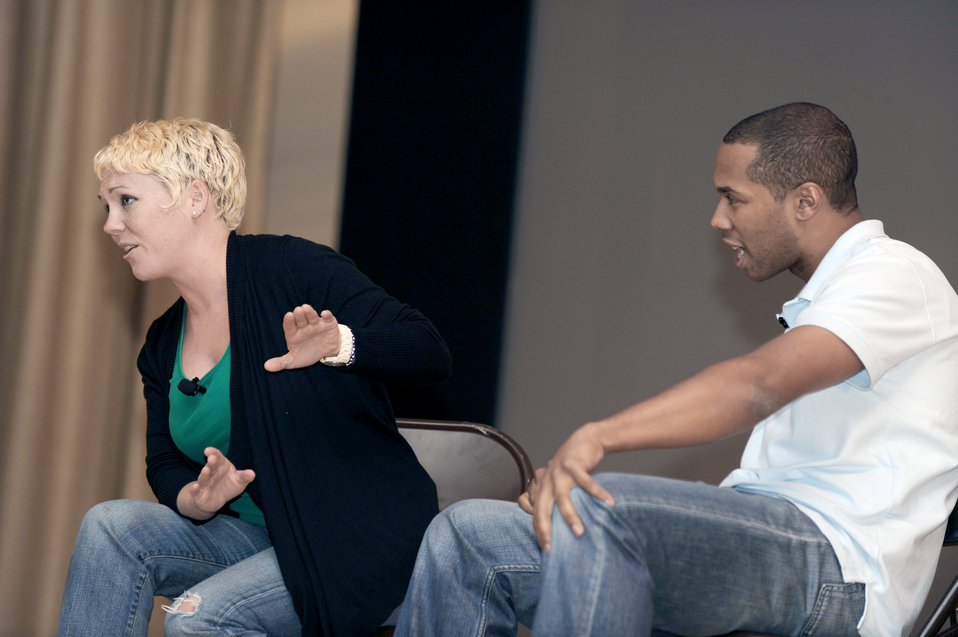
'Sex Signals'

Courtney Abbott and DeRante Parker, an acting group from Chicago, Ill, perform their skit during a